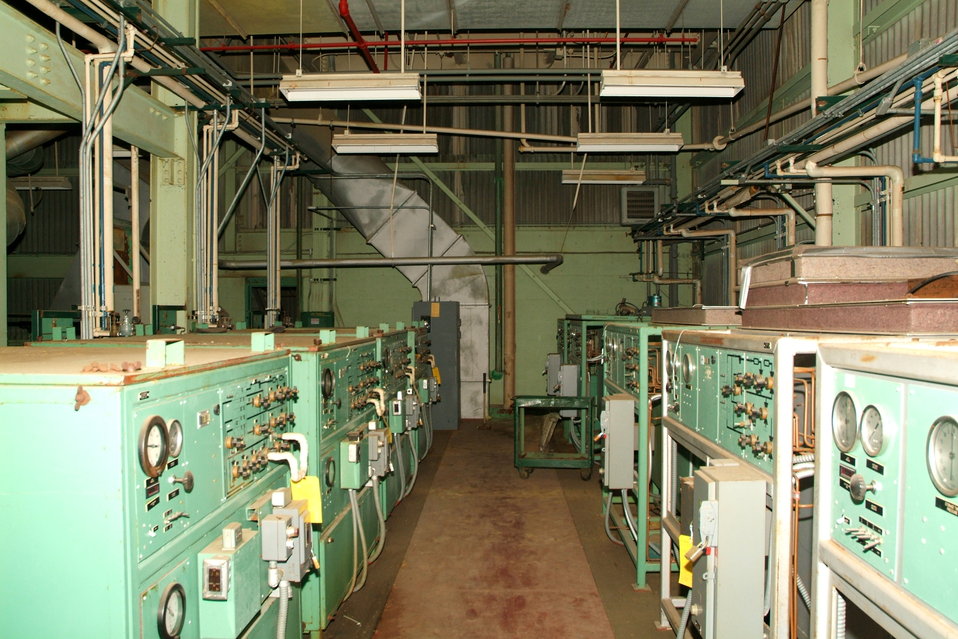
Paducah Recovery Act work

Uranium hexafluoride valve test cabinets, left, line a section of the fifth floor of the C-340 Metals Plant before cleanup.